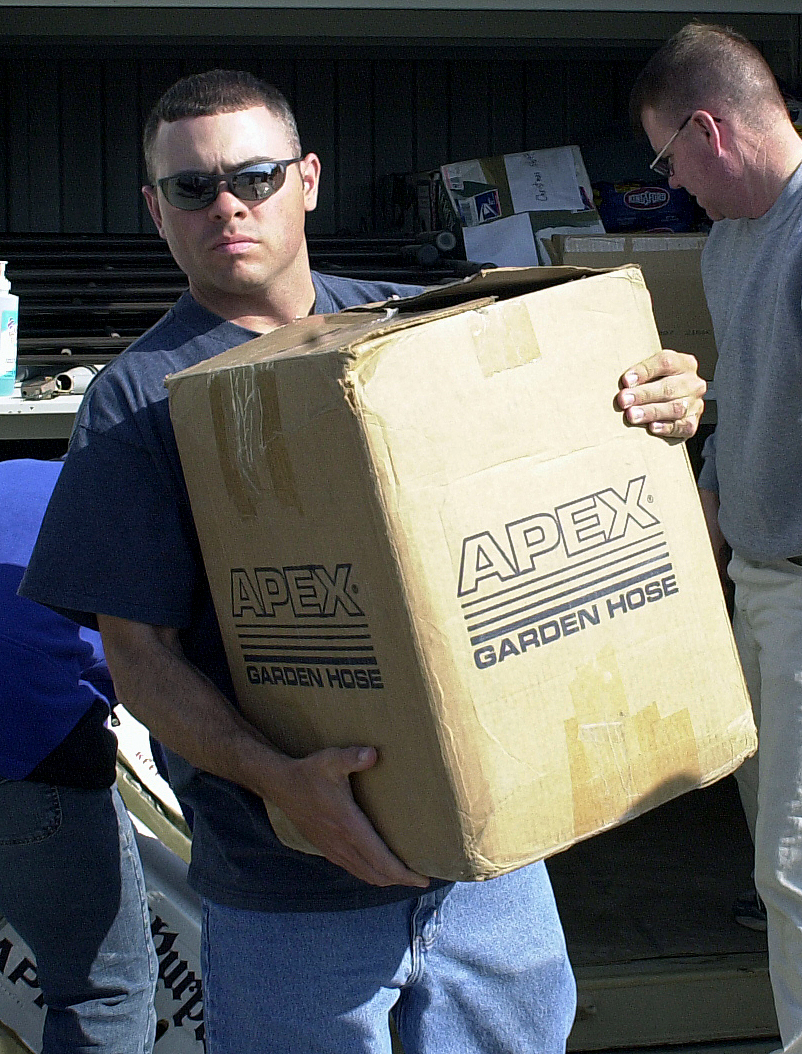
Lending a helping hand in Uzbekistan

KARSHI-KHANABAD AIR BASE, Uzbekistan -- Staff Sgt. Jason Morris helps load school supplies and gifts for a local Uzbekistan children's home here. He is assigned to the 416th Air Expeditionary Group here.